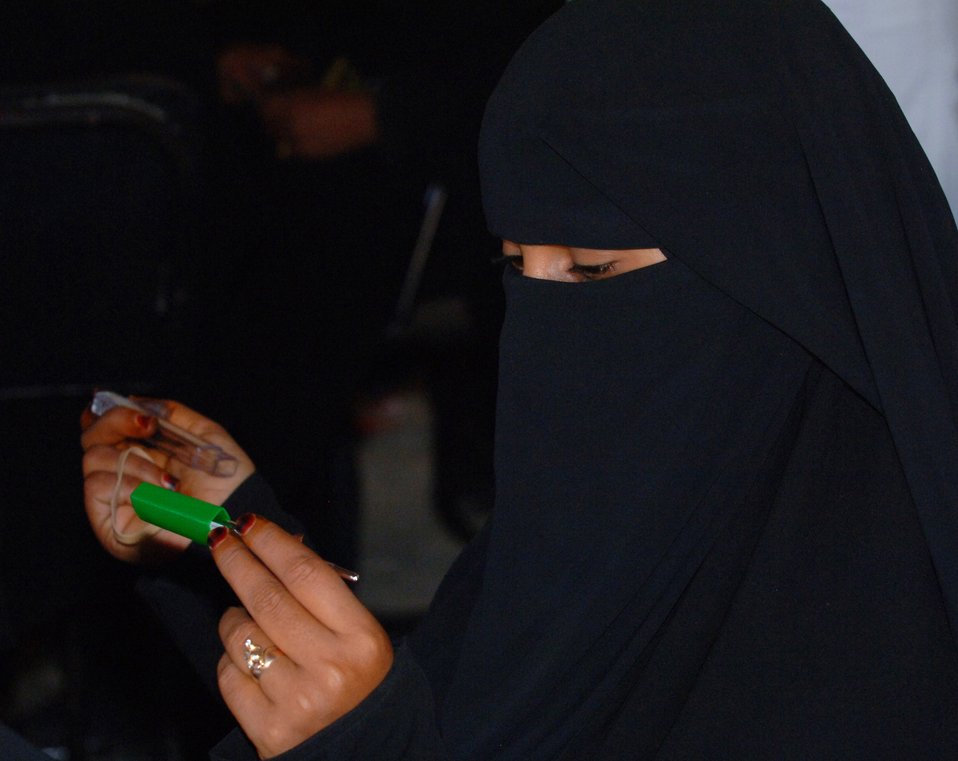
Veterinary project has big impact on small island

A Yemen animal health worker studies a thermometer during training as part of a Combined Joint Task Force-Horn of Africa veterinary civic action project on the island of Socotra. The objective of the project was to teach women on the island basic animal husbandry techniques.